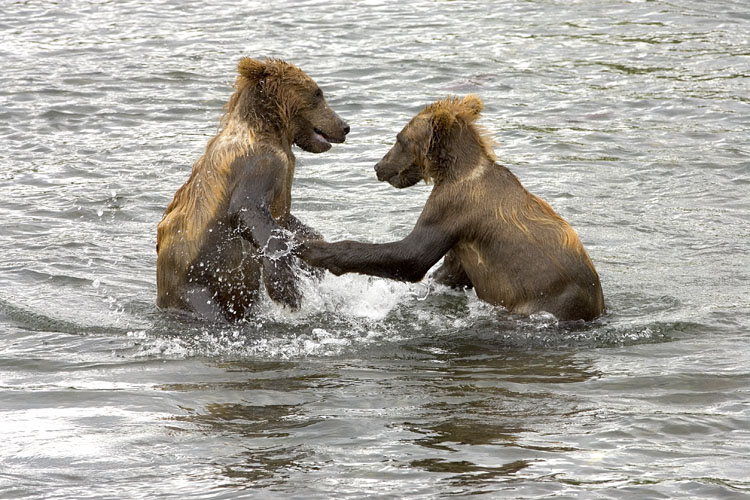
Kodiak Brown Bears

Playful Kodiak Bears